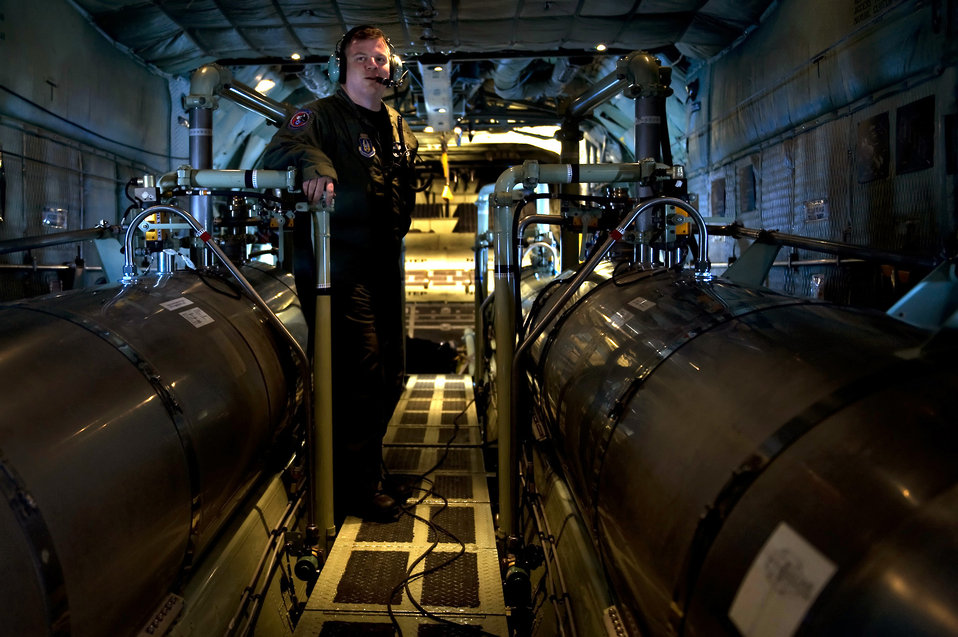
C-130 aircrew helps fight oil spill

Master Sgt. Brad Franken monitors tanks holding oil dispersants while flying in a C-130 Hercules over the Gulf of Mexico May 7, 2010. Sergeant Franken is a loadmaster from the Air Force Reserve Command's 910th Airlift Wing at Youngstown-Warren Air Reserve Station, Ohio.